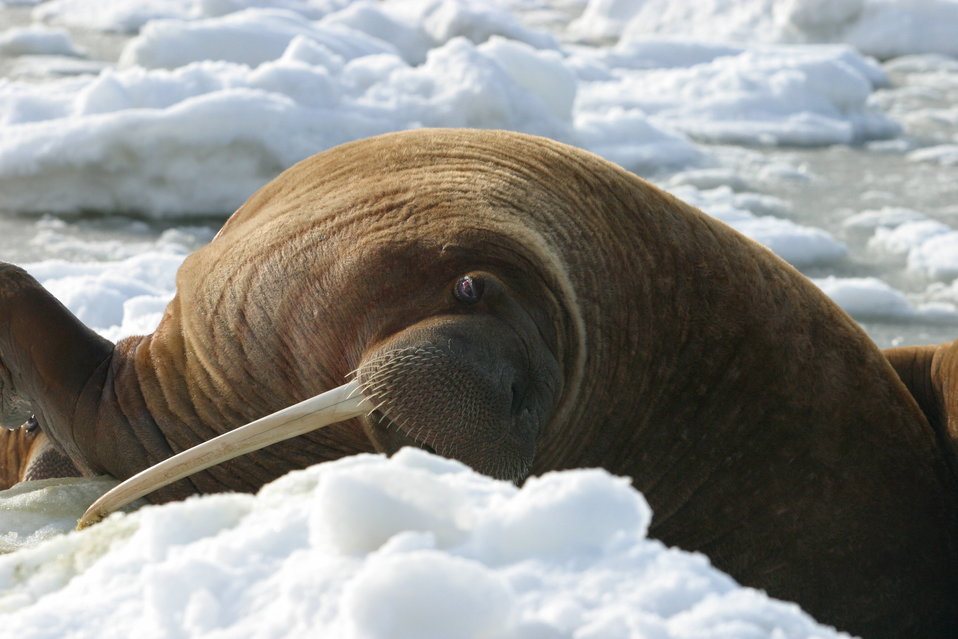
Walrus Cow Asleep on the Ice

A walrus cow takes a nap on pack ice.